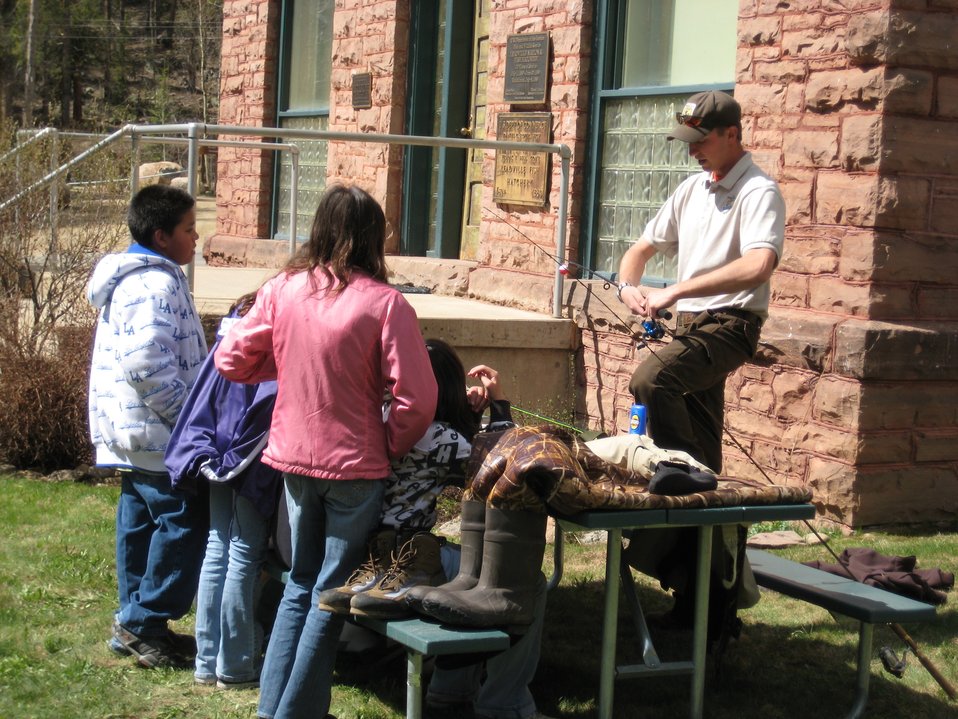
Pathways to Fishing Program

The annual Pathways to Fishing Program is held each year at the Leadville National Fish Hatchery. All the 5th grade classes in Lake County, CO come out to participate! The annual Pathways to Fishing is a 10-station program that teaches kids the skills needed to become successful fishermen.